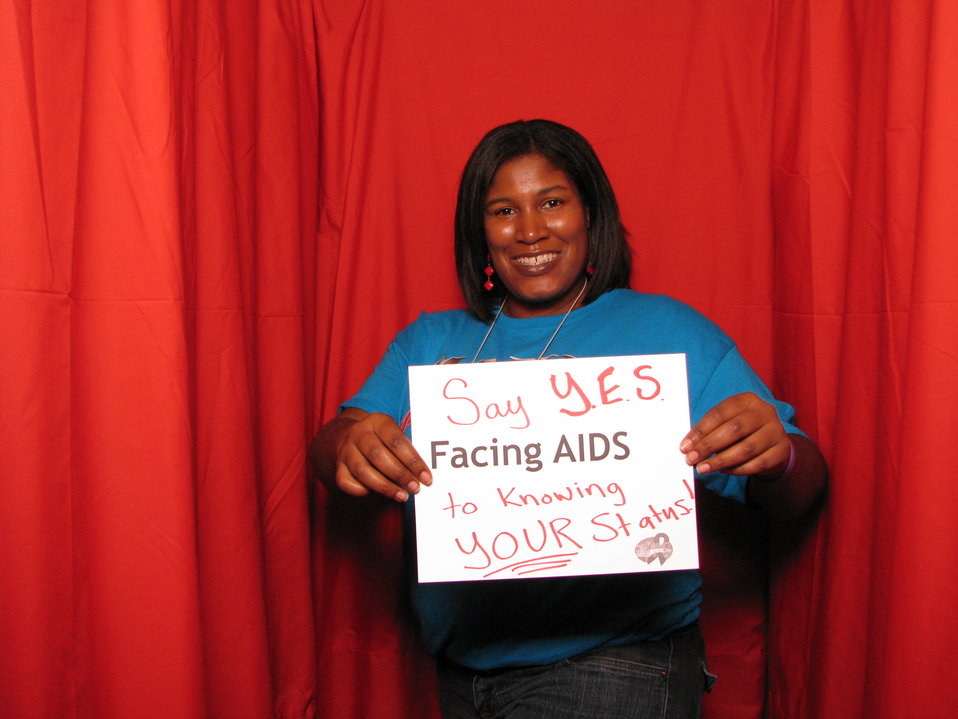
Say Y.E.S. FACING AIDS to knowing YOUR Status!

From the AIDS.gov photo booth at the U.S. Conference on AIDS, September 2010 (Orlando, FL).